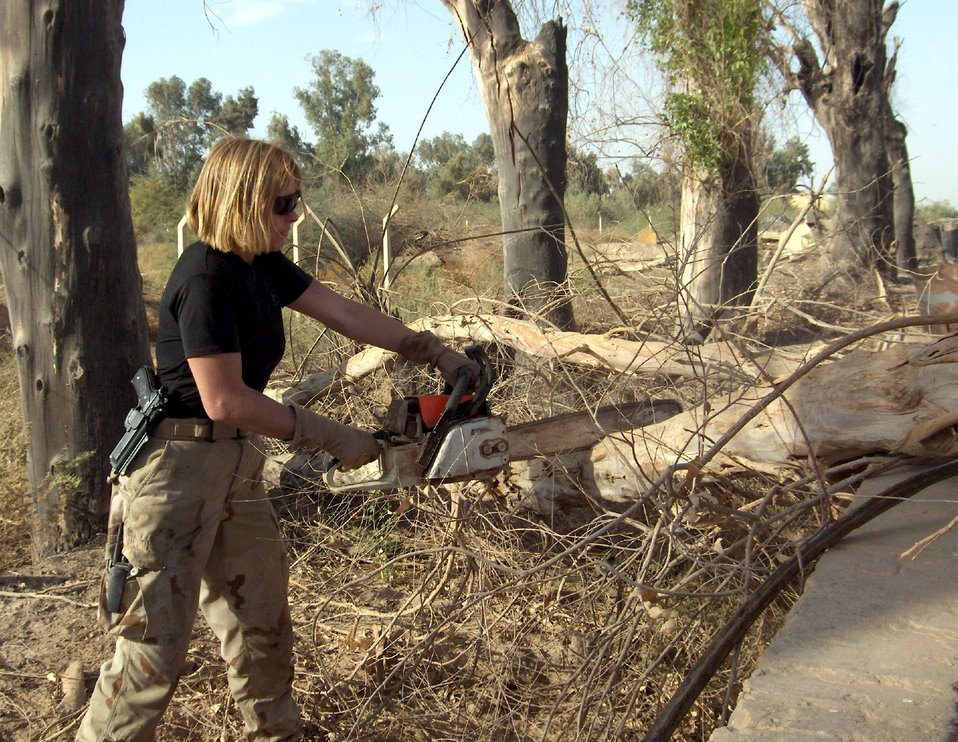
Captain marches into history

Capt. Jutta Cortes clears debris as part of her volunteer efforts in November 2005 to restore the Royal Air Force Habbaniya cemetery in Iraq. Her efforts led to a request by the RAF Habbaniya Association for her to join its British regiment in a remembrance service at The Cenotaph memorial in London's Whitehall Nov. 12. Captain Cortes is the deputy director of security forces for the 20th Air Force at F.E. Warren Air Force Base, Wyo.